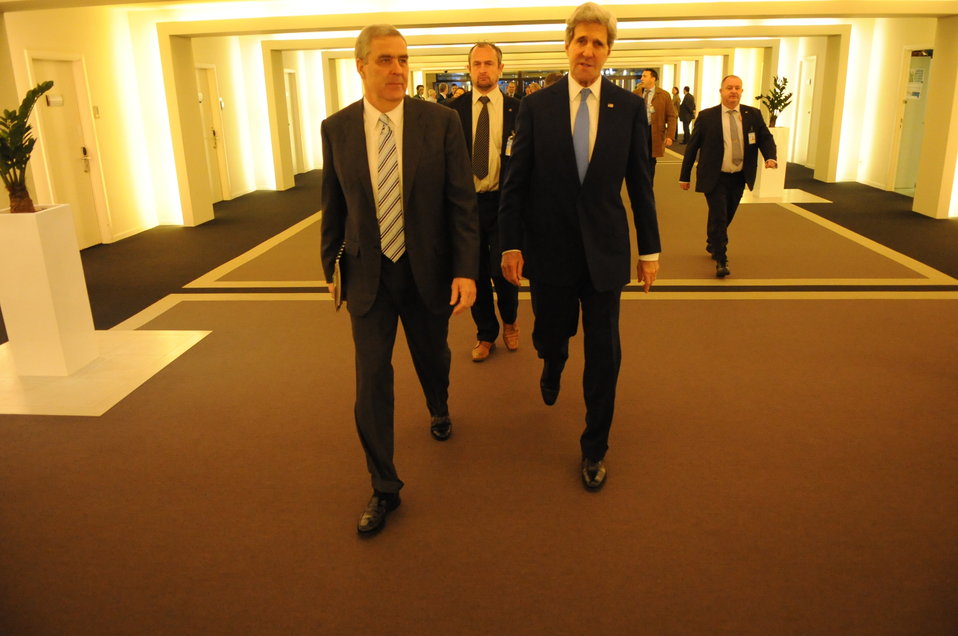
Secretary Kerry, Ambassador Lute Walk Through NATO Headquarters

U.S. Secretary of State John Kerry and U.S. Ambassador to NATO Douglas Lute walk to the first in a series of meetings at NATO Headquarters in Brussels, Belgium, on Dec. 4, 2013.